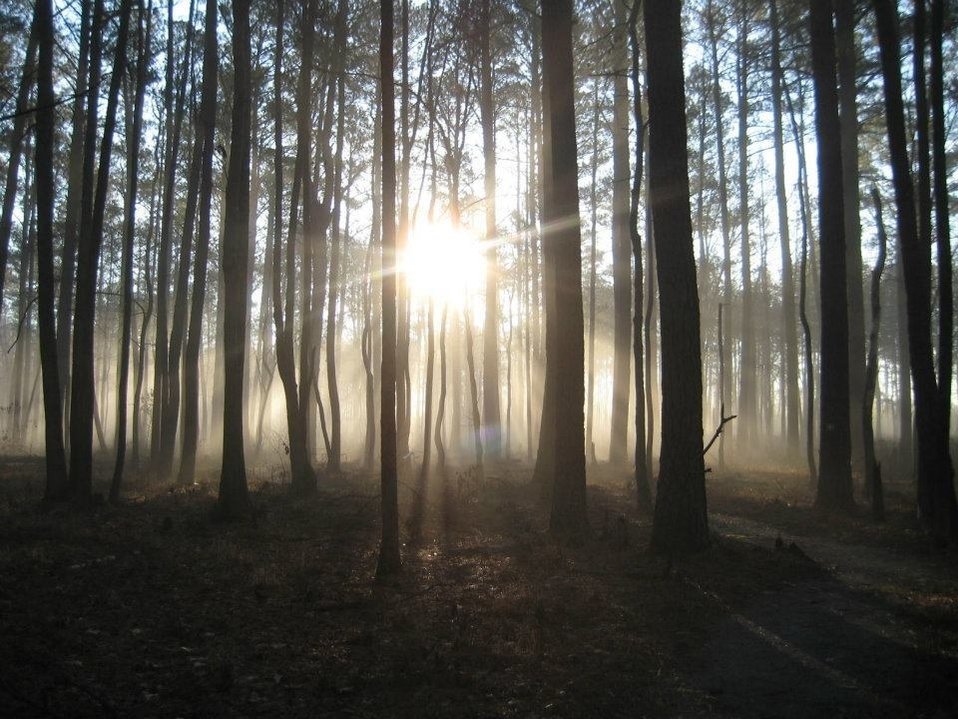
Photo of the Week - Foggy Morn at Great Dismal Swamp National Wildlife Refuge (VA)

Photo of the Week - 12/10/12

A foggy morning at Great Dismal Swamp National Wildlife Refuge.